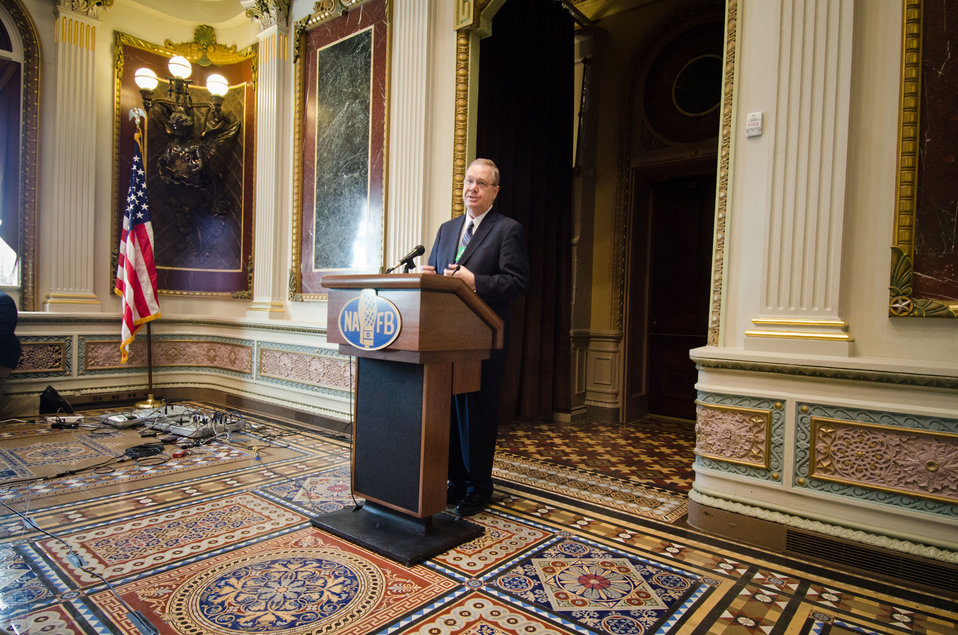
Rural Development Under Secretary Dallas Tonsager spoke about rural revitalization at the spring National Association of Farm Broadcasters (NAFB), “Washington Watch” member retreat in Washington, D.C. This year the meeting was held in the Eisenhower Executive Office Building, Indian Treaty Room Tuesday, April 24, 2012 featuring United Sates Department of Agriculture and Obama Administration officials. This opportunity provides an occasion to highlight efforts to rebuild and revitalize rural America, including efforts for the agricultural community. NAFB is the recognized and trusted source of agricultural and rural lifestyle information for America with approximately 200 members who broadcast via radio in nearly every state in the country.